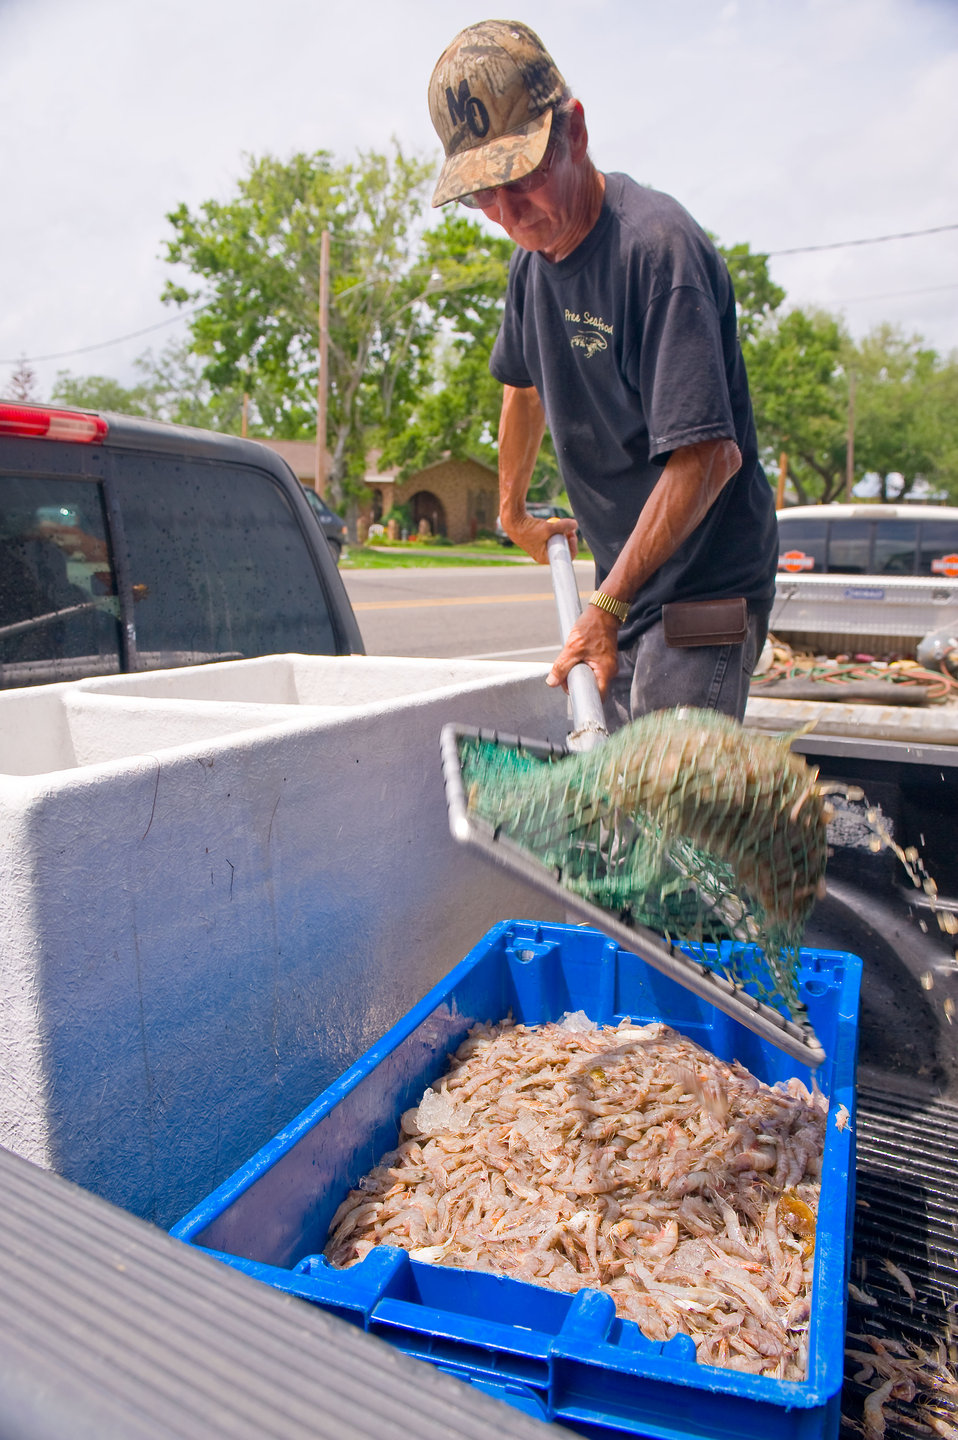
Many voice concerns over the threats to their livelihood.

May 13, 2010.